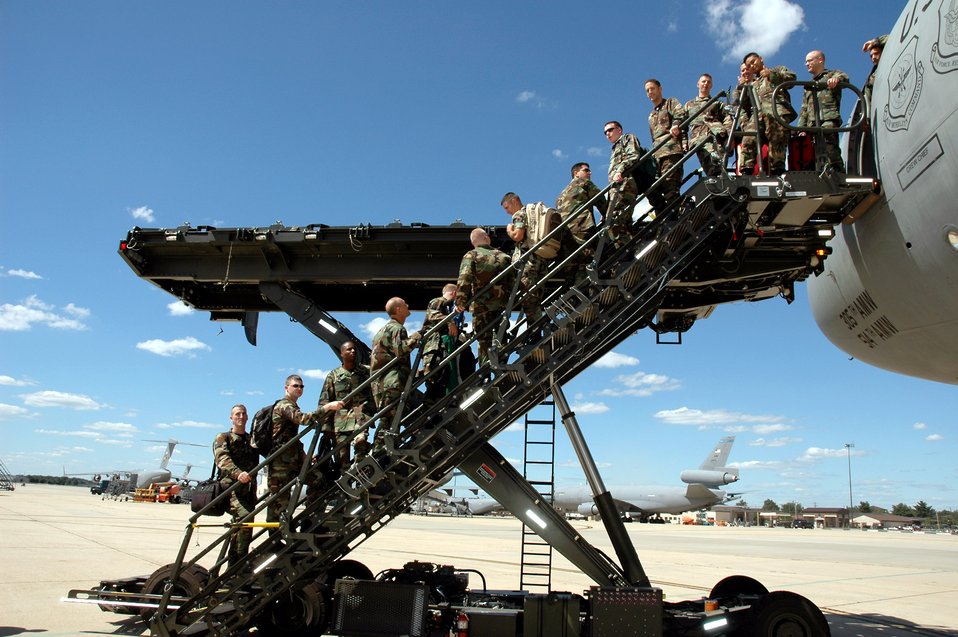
Air Mobility Battlelab combines cargo, passenger loaders

Airmen use the aircraft stairs portion of the Halvorson Air Stairs Kit-modified cargo loader during a demonstration of the loader at McGuire Air Force Base, N.J., in 2006. The development of the loader is from an initiative at the Air Mobility Warfare Center's Air Mobility Battlelab at Fort Dix, N.J.